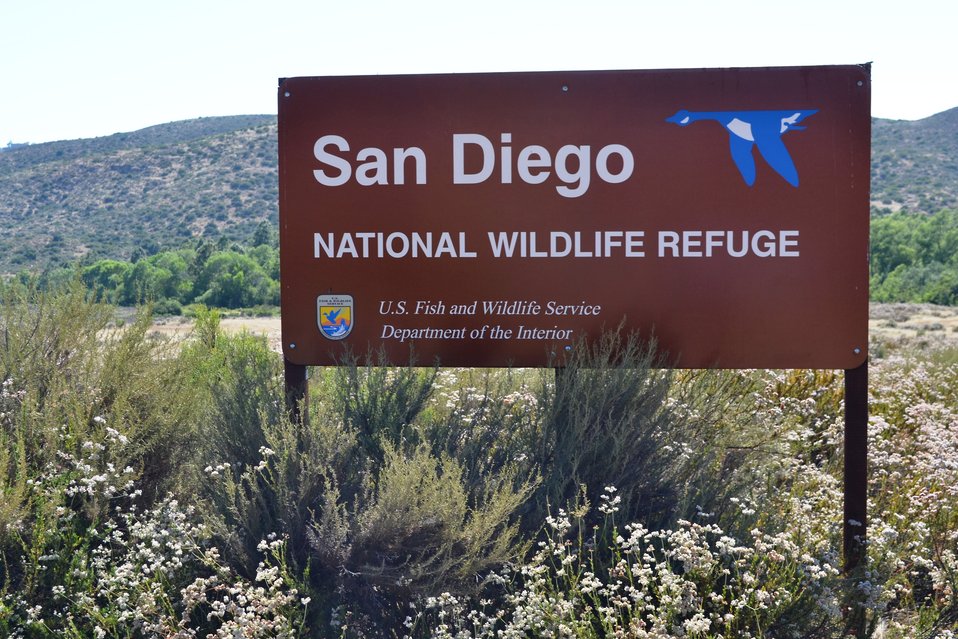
Refuge entrance sign